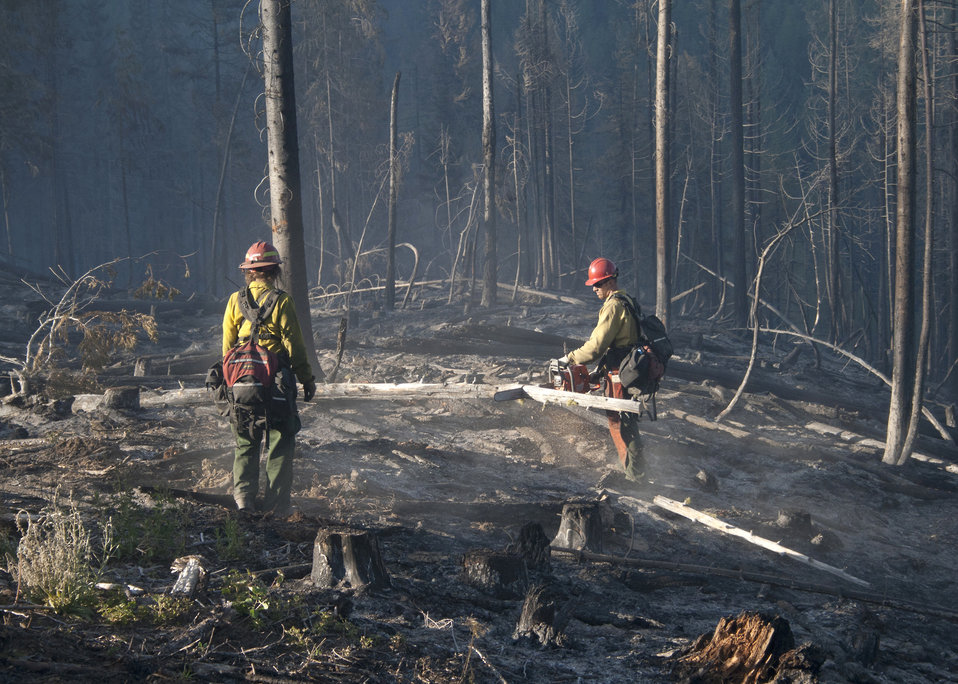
Firefighters supported by three fire engines, two helicopters, two water tenders, a dozer and an air tanker battled to contain the 90 acre Rogers Fire located on Mt. Rogers five miles west of Aladdin, WA on the Colville National Forest. Firefighters worked under adverse conditions with steep terrain and gusting winds to reduce the loss of timber and protect the Rogers Mountain Trail. The Rogers Fire began on Aug. 9, 2011 and was controlled by Aug. 19, 2011 with mop up crews ensuring that no flare-ups occurred. Colville National Forest has 1.1 million acres in northeastern Washington and includes the Kettle River, Selkirk Mountain ranges, and the upper reaches of the Columbia River.